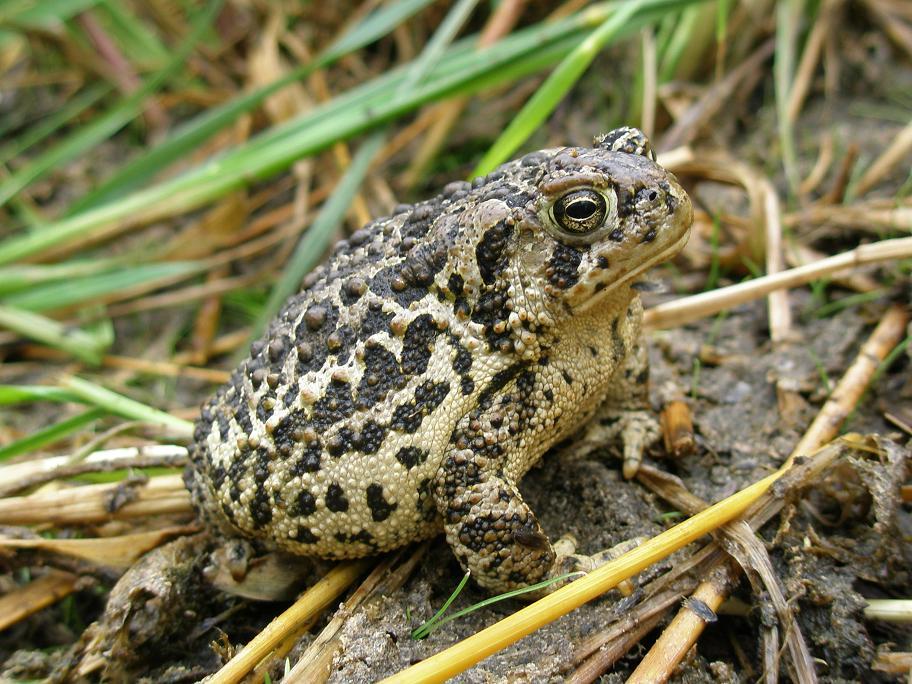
17th Place - Wyoming Toad

The Wyoming toad, listed as an endangered species in 1984, occurs only in Albany County, Wyoming. Extinct in the wild, the Wyoming toad is the most endangered amphibian in North America.

Location: Mortenson Lake NWR

Credit: Sara Armstrong / USFWS

Photo Contest Entry #52